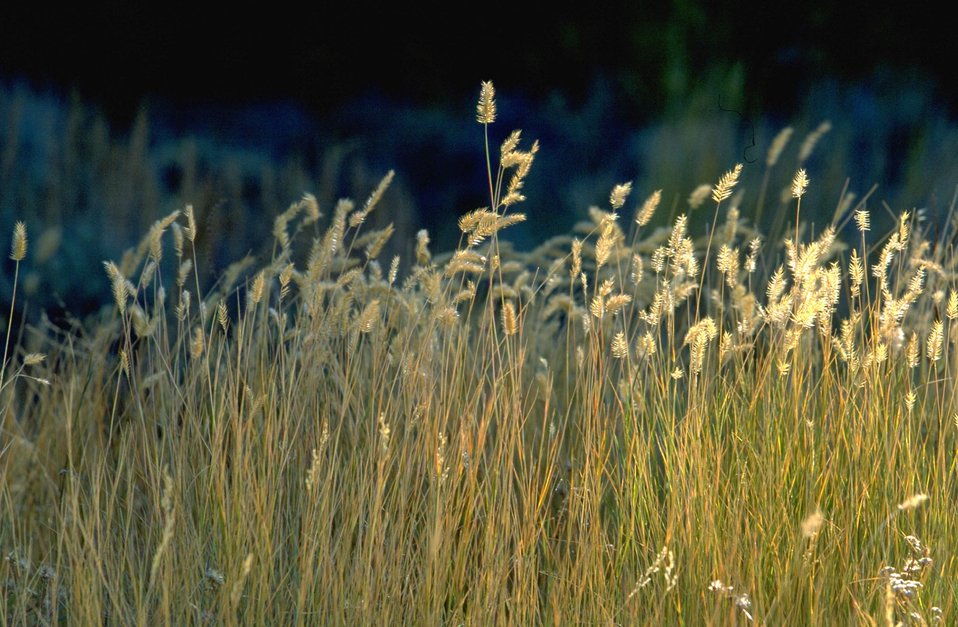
Grass, somewhere in the Dillon Field Office Area